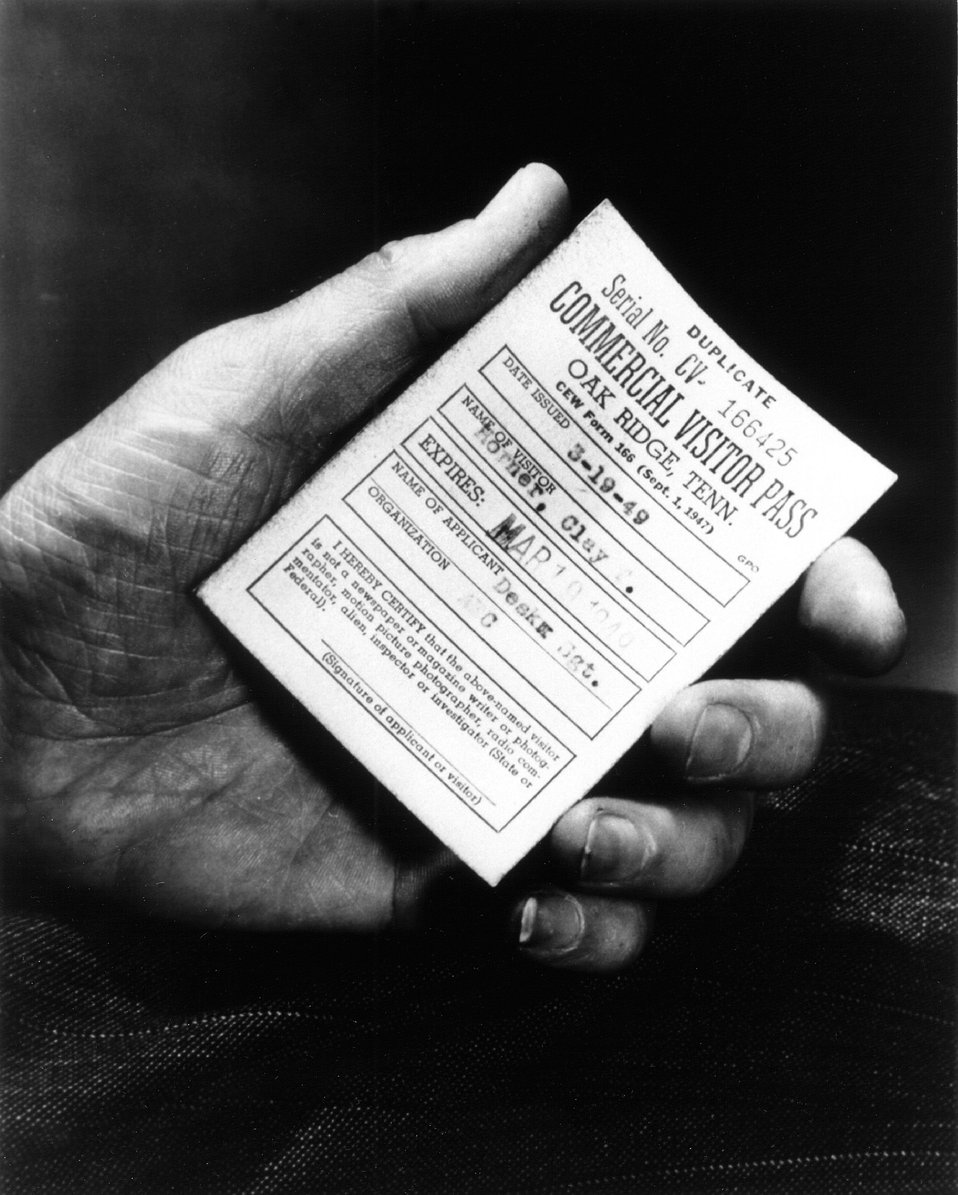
Visitor badge to Oak Ridge Area. c. 1949